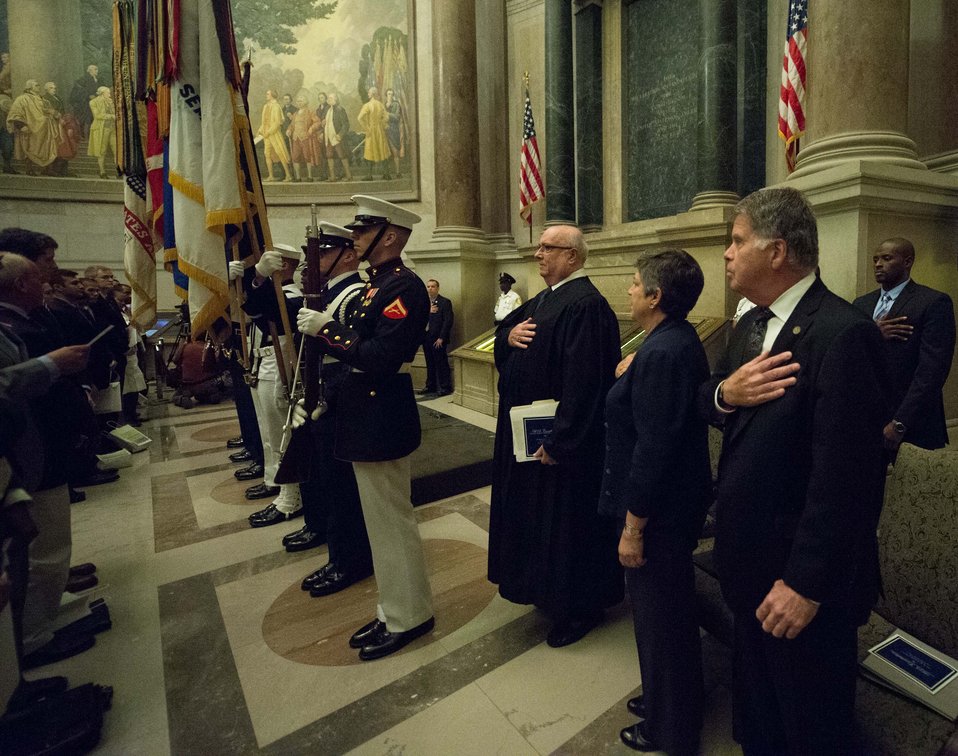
Constitution Day Naturalization Ceremony

The Color Guard stands in front of the Constitution. To the right stands the Honorable Royce Lamberth, Secretary of Homeland Security Janet Napolitano, and Archivist of the United States David S. Ferriero.